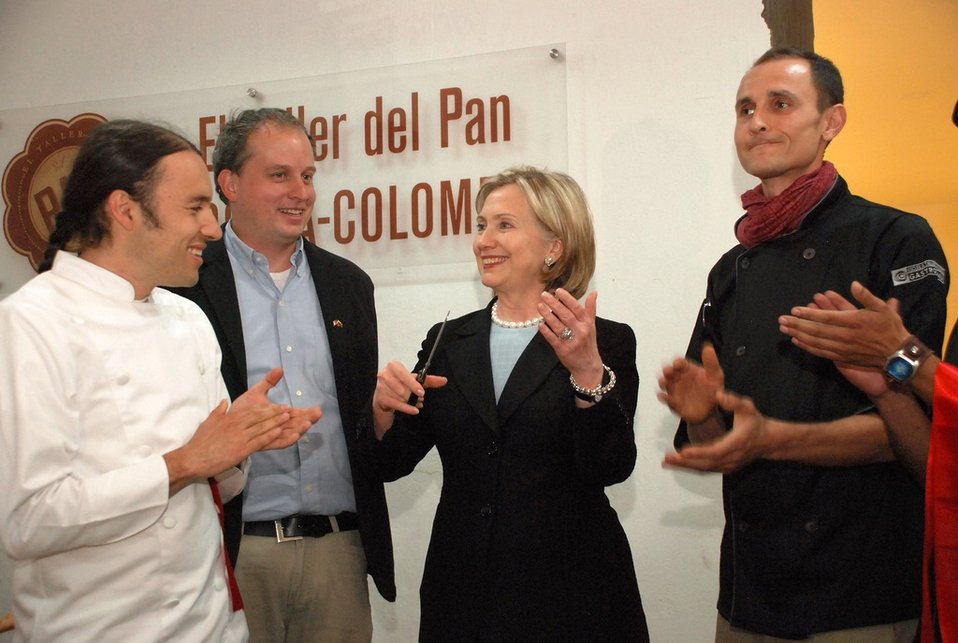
Secretary Clinton Visits Escuela Taller de Bogotá

U.S. Secretary of State Hillary Rodham Clinton visits Escuela Taller de Bogotá, a vocational school for at-risk youth supported by USAID, in Bogotá, Colombia, on June 9, 2010. The